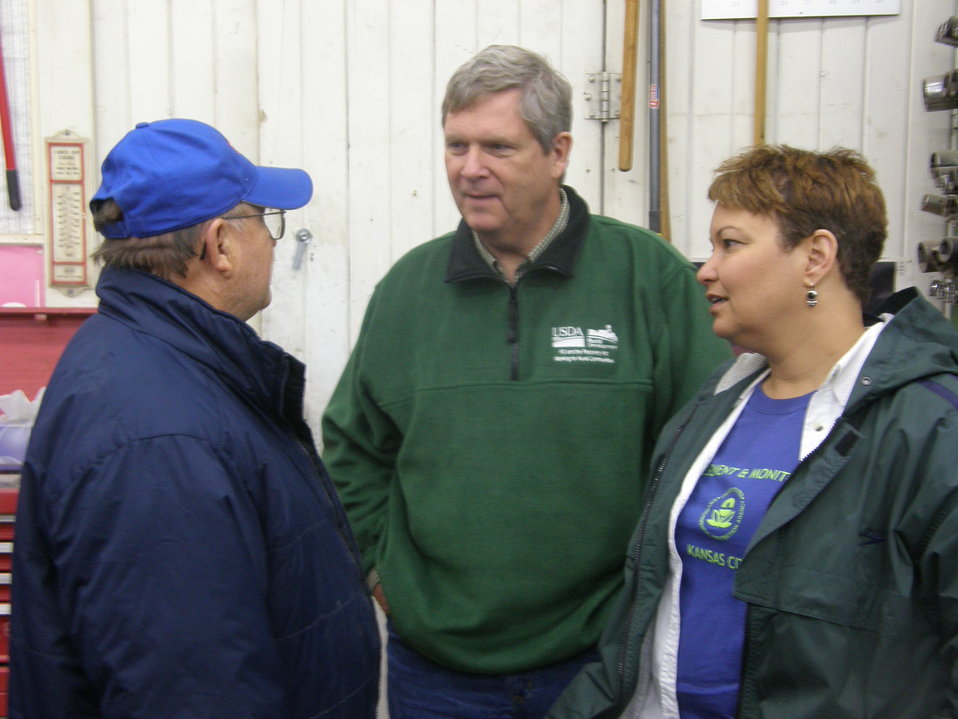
Gordon Wassenaar (left) talks with Agriculture Secretary Tom Vilsack and Environmental Protection Agency Administrator Lisa P. Jackson about the conservation techniques he utilizes on his 1,600-acre row crop farm near Prairie City, IA, on Tuesday, April 19, 2011.